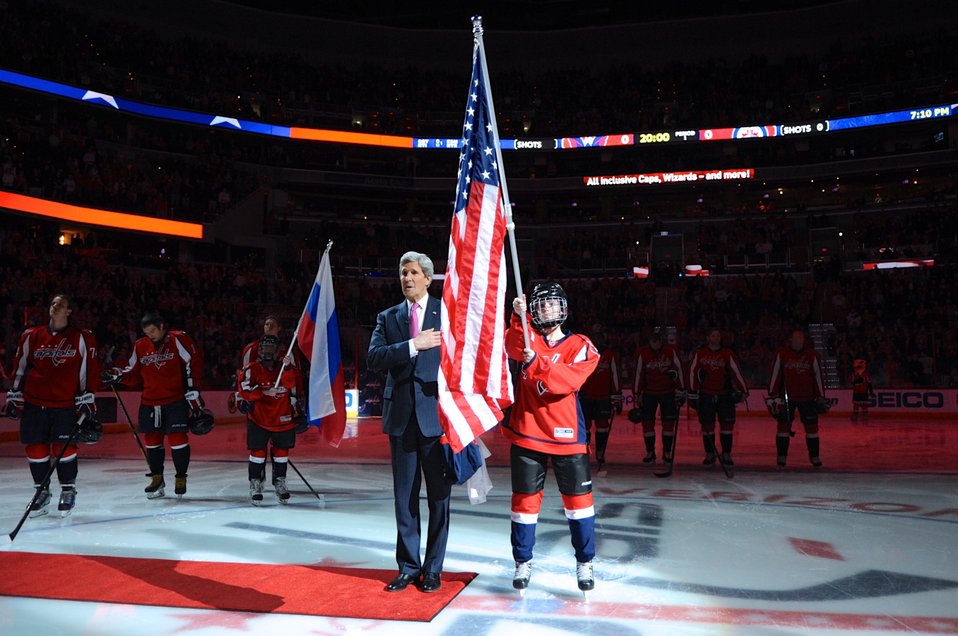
Secretary Kerry Signs National Anthem at Send-Off for Olympic Hockey Players

U.S. Secretary of State John Kerry sings the National Anthem at center ice at the Verizon Center in Washington, D.C., after honoring Olympics-bound hockey players before the Washington Capitals-Winnipeg Jets game on February 6, 2014.